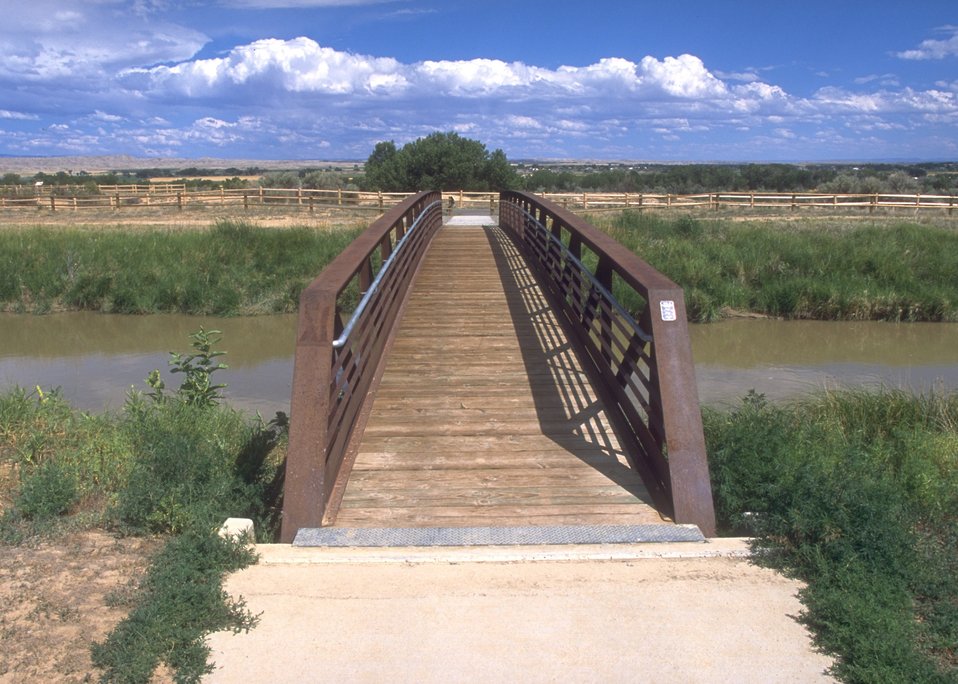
Duck Swamp Interpretive Area, Worland Field Office.